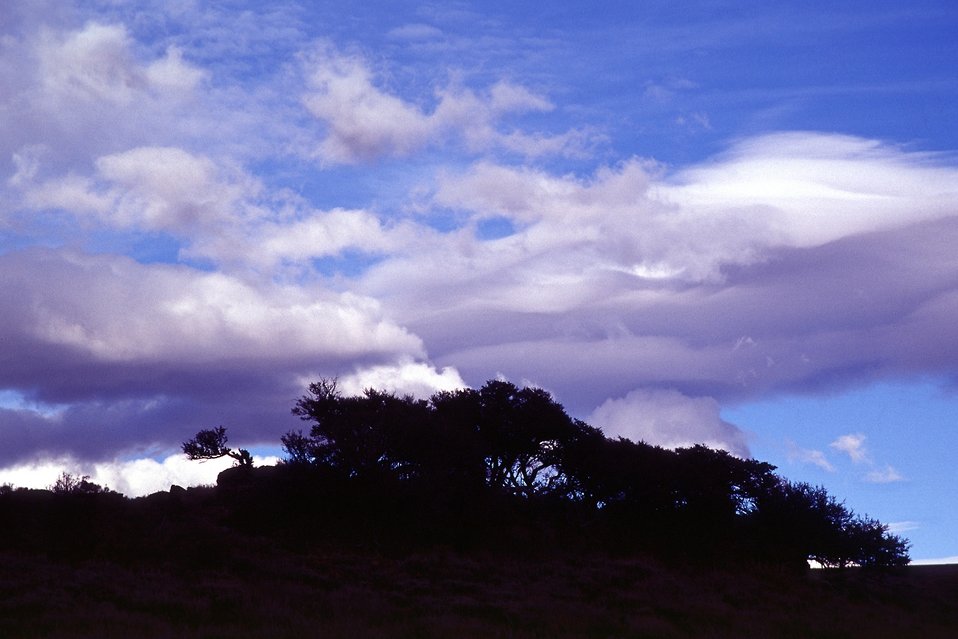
Clouds above Steen's Mountain near Jackman Park.